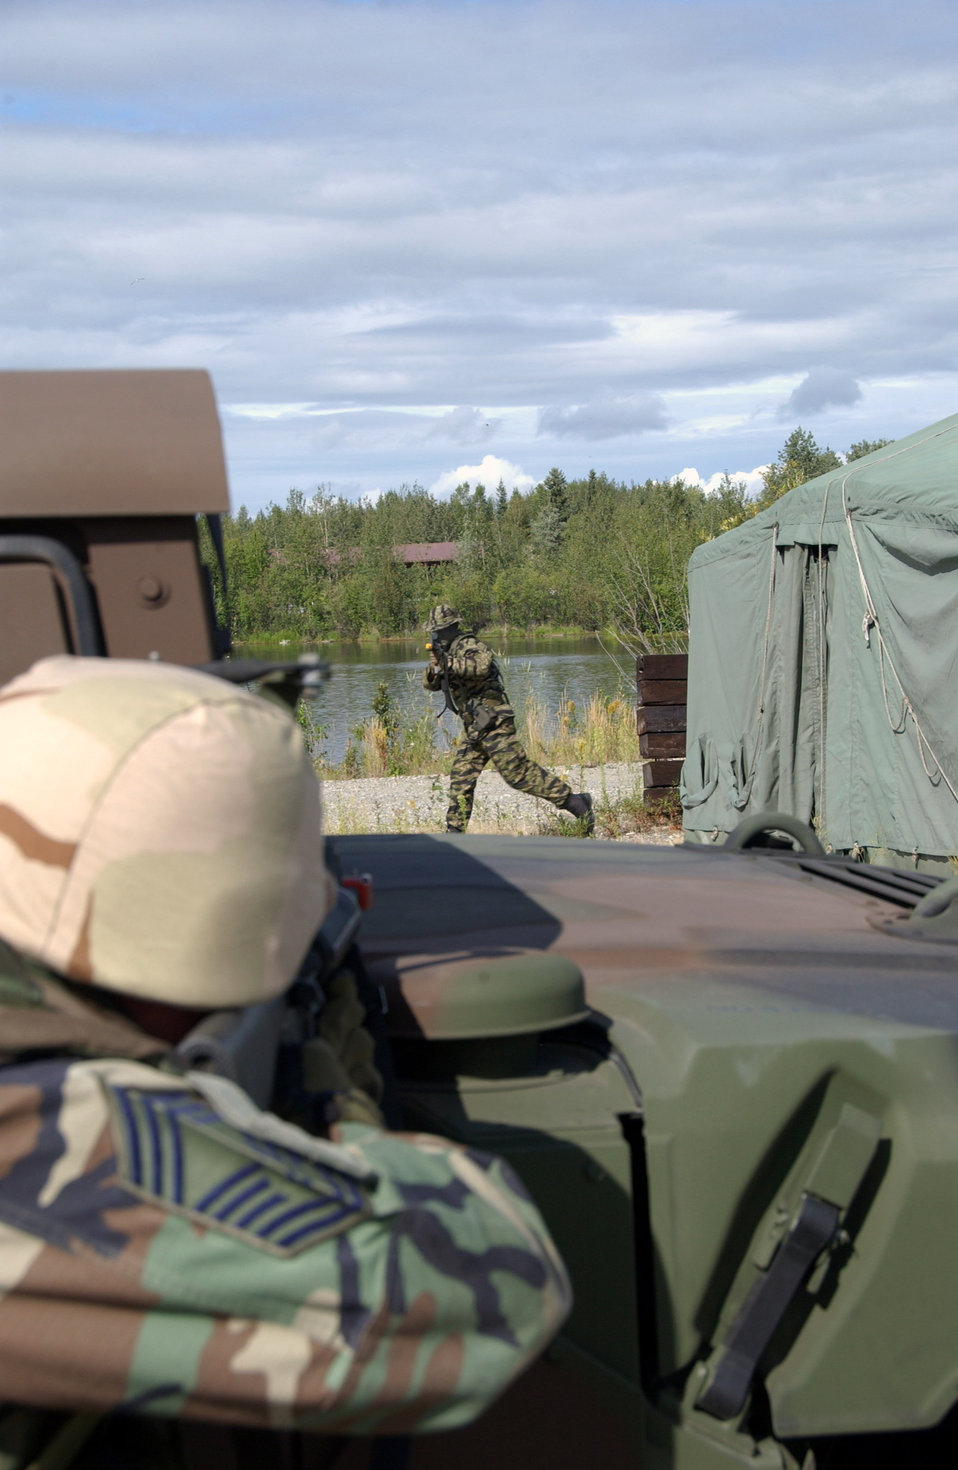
Air warriors train for deployment

Chief Master Sgt. Matthew Marshall fires at an